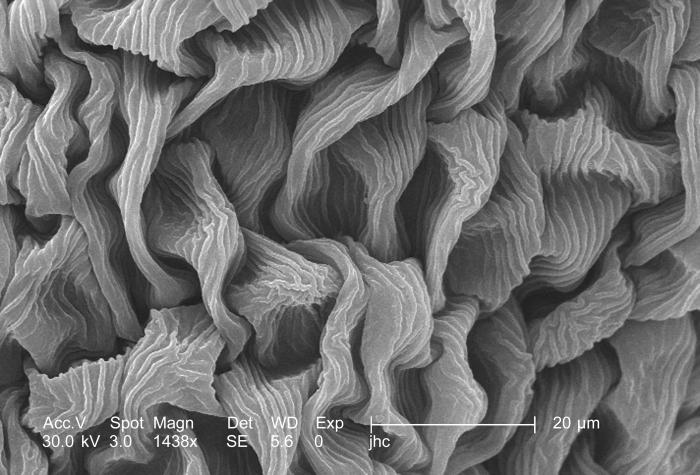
Under a moderately high magnification of 1438x, this scanning electron micrograph (SEM) revealed some of the ultrastructural details seen on the surface of a "crimson clover", Trifolium incarnatum flower petal. This clover was blooming during the month of March on the grounds of the Centers for Disease Control headquarters in Atlanta, Georgia. Being that flower petals are actually modified leaves, the highly textured surface, composed of many cavitations and protuberances, are actually modification of the plant's leaf morphology.